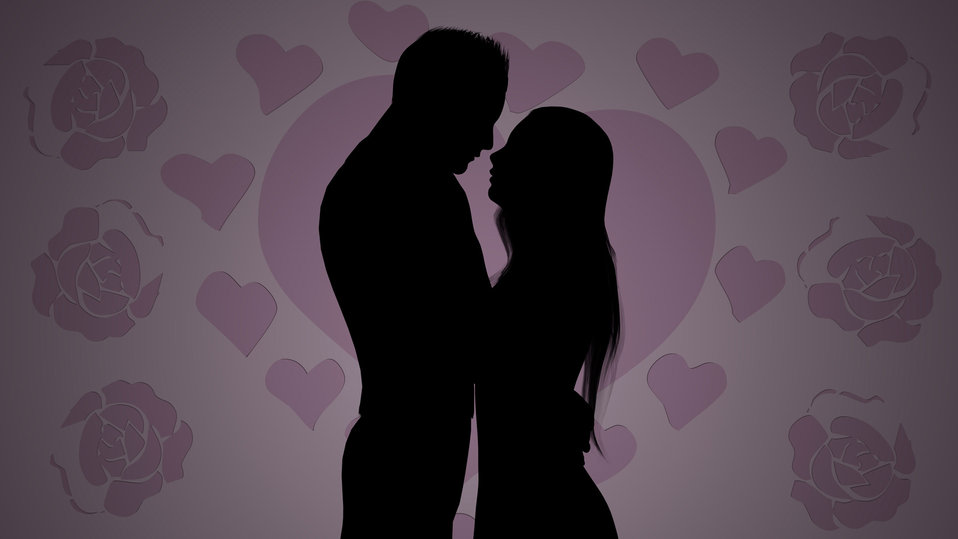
Love

A love illustration.